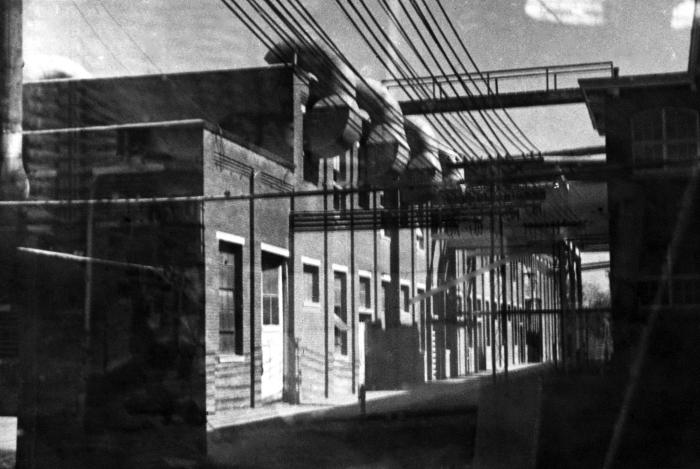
This historical image was provided by the Center for Disease Control's (CDC), National Institute for Occupational Safety and Health (NIOSH). The photograph depicted the exterior of an asbestos thread-making mill. Note the exhaust ventilation stacks located atop the mill. From this image, the air quality emitted from these exhaust vents could not be determined. Asbestos has been found to be the cause of long-standing, chronic respiratory illnesses such as mesothelioma. When airborne fibers are inhaled, they become permanently deposited in the lungs. These fibers are extremely sharp, ensuring their pulmonary permanency. These particulates initiate a chronic inflammatory response inside the lungs, and subsequently can lead to mesothelioma, a malignant form of lung cancer affecting the lining of the pulmonary cavity and lung exterior.